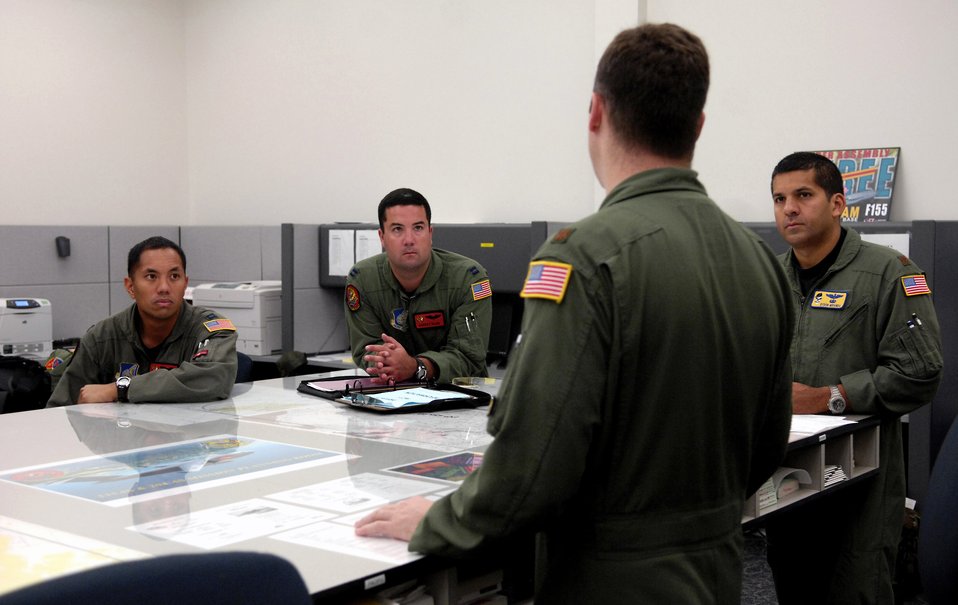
Hickam crew prepares for AMC Rodeo

C-17 Globemaster III aircrew members conduct a flight briefing prior to departing June 22 on a refueling training mission from Hickam Air Force Base, Hawaii. A KC-135 Stratotanker from the 909th Air Refueling Squadron at Kadena Air Base, Japan, is at Hickam AFB practicing with the C-17 crew from the 535th Airlift Squadron for the 2007 Air Mobility Command Rodeo.